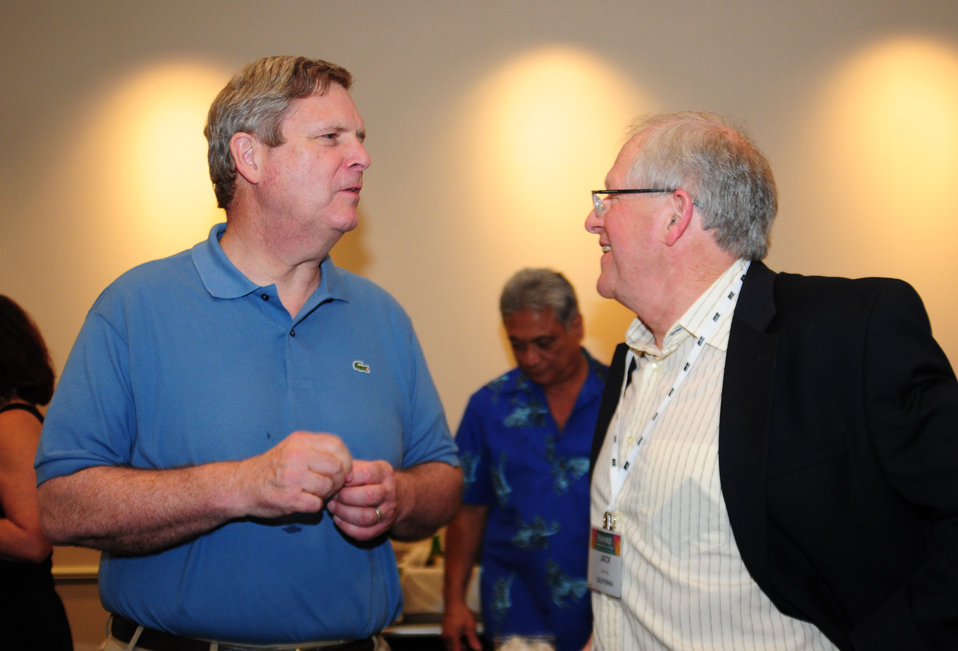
Agriculture Secretary Tom Vilsack (left) chats with California Farm Bureau Federation Manager of National Affairs Jack King during the California Farm Bureau Federation event at the Hilton Hawaiian Village, Waikiki, Hawaii, on Sunday, January 8, 2012.